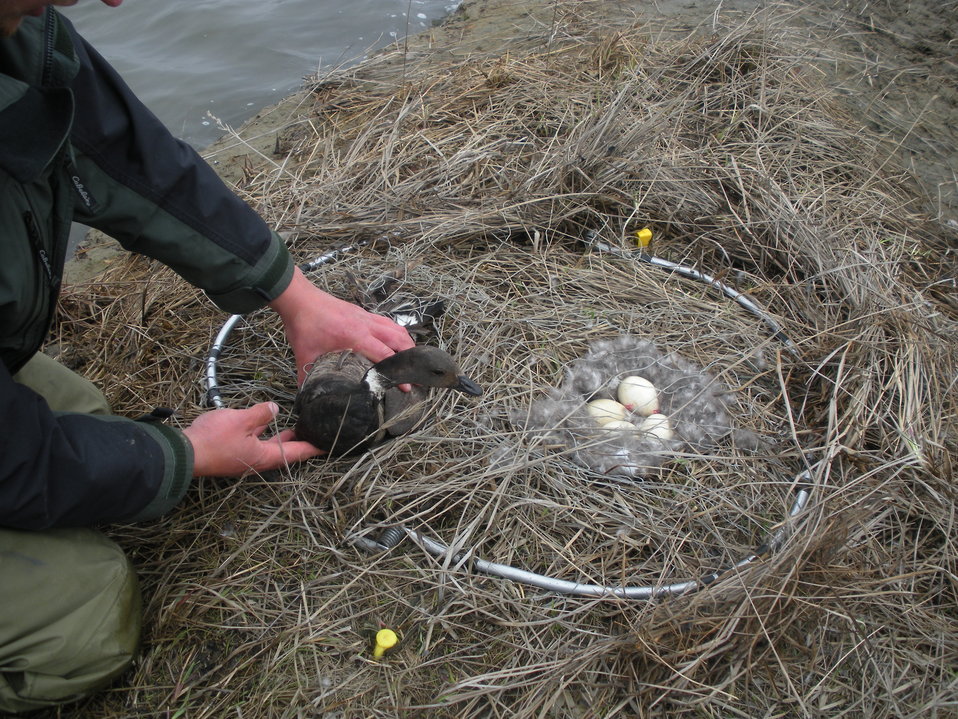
Bow-trapped Pacific Black Brant

Once the female has made her way back to the nest and is resting comfortably on it, the line is pulled. This releases the trigger and snaps the bowtrap over the female. Here a Pacific Black Brant has been capturing using the bow-trap technique.

USFWS Yukon Delta NWR